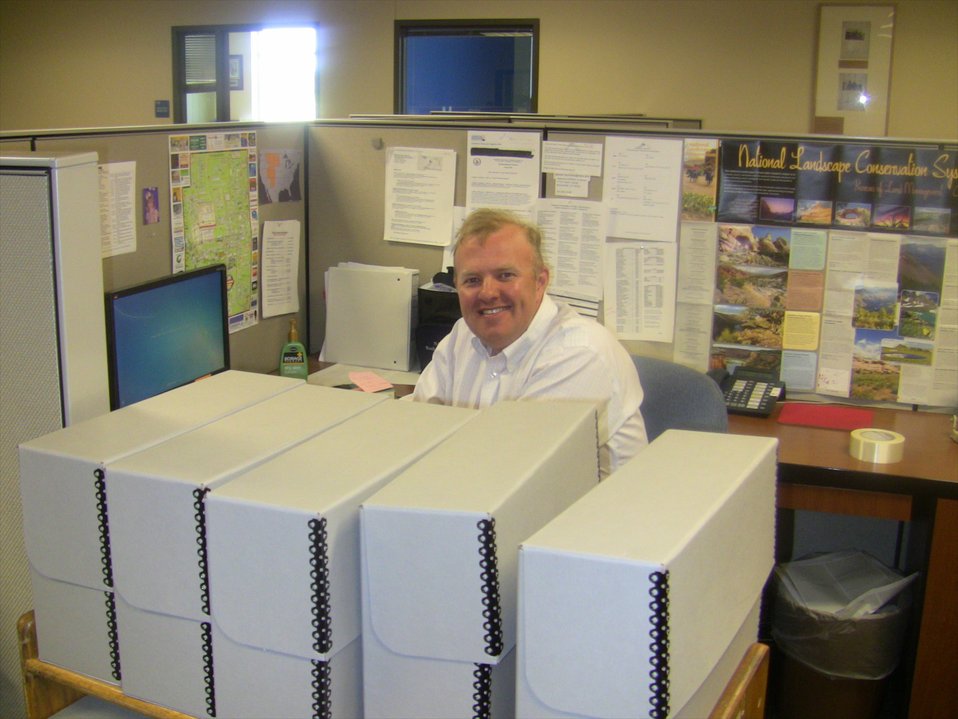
Ed Wilson performing holding maintanance; Location: National Archives at Denver, Broomfield, CO